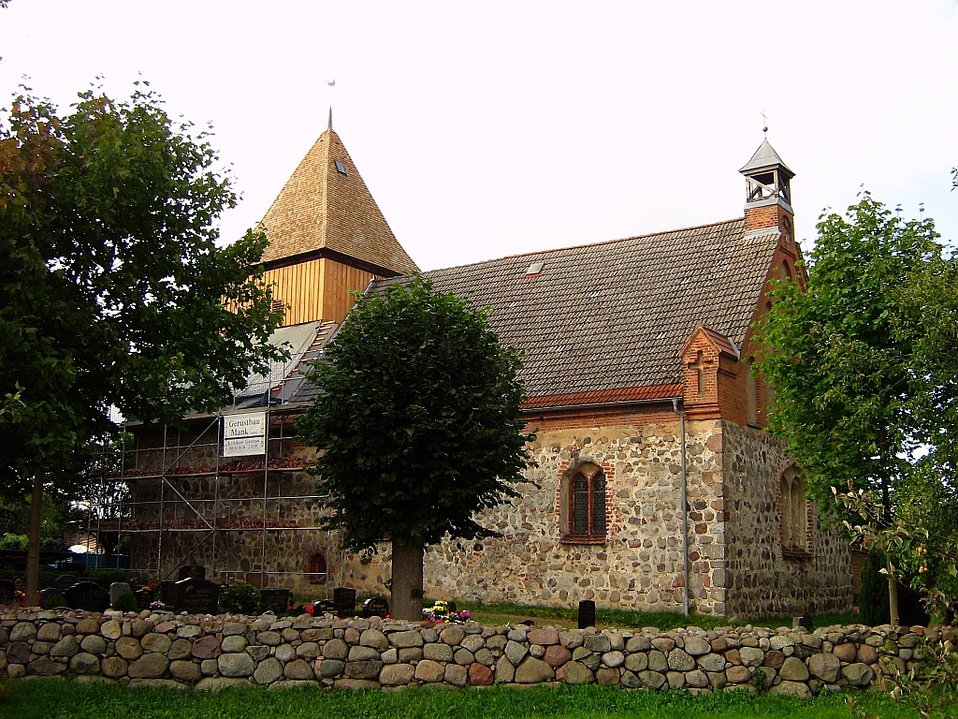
Deutsch: Die Kirche in Dänschenburg (Stadt Marlow, Landkreis Nordvorpommern, Mecklenburg)